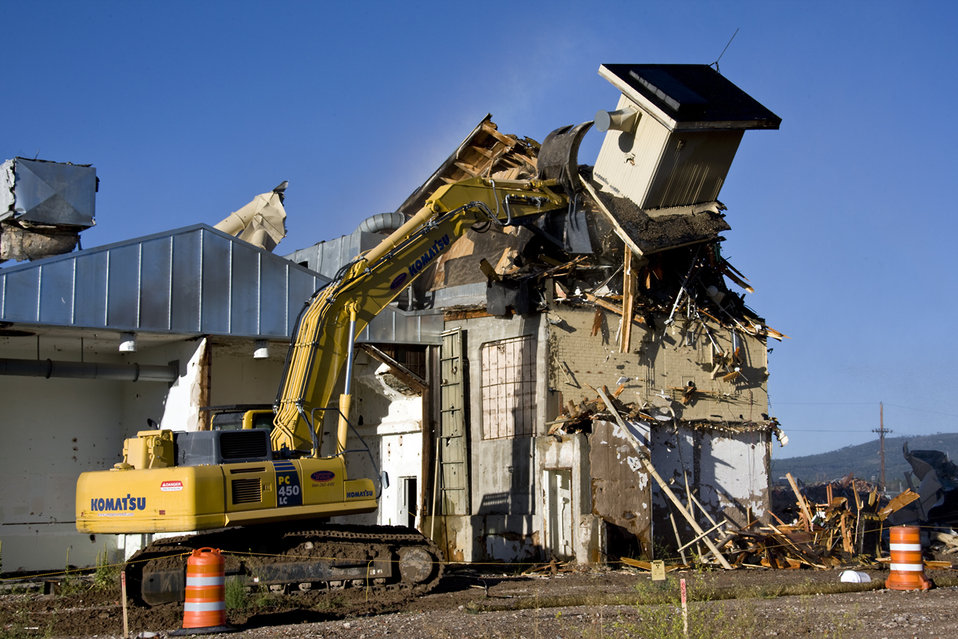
Los Alamos Demolition Work